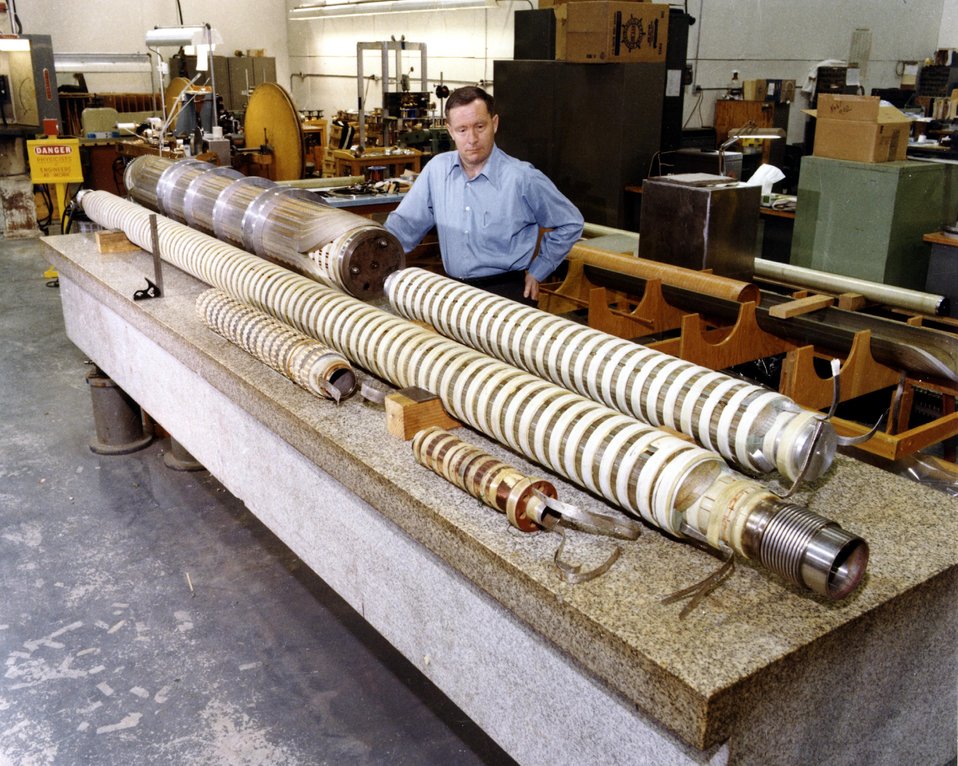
CBA IS A PROTON-PROTON COLLIDING BEAM ACCELERATOR WHICH IS BEING BUILT TO STUDY THE BASIC STRUCTURE OF ENERGY AND MATTER. THE FACILITY ITSELF IS AN UNDERGROUND CIRCULAR TUNNEL, WHICH IS 3.8 KILOMETERS IN CIRCUMFERENCE. TWO RINGS OF SUPERCONDUCTING MAGNETS WILL BE INSIDE THE TUNNEL. PRO- TON BEAMS WILL BE INJECTED INTO THE TUNNEL AND ACCELERATED TO ENERGIES UP TO 400 GEV. AT SIX PLACES ALONG THE TUNNEL, THE BEAMS WILL COLLIDE. EXPERIMENTAL HALLS, WHICH ENCLOSE THESE 6 INTERSECTIONS, WILL HOUSE EQUIPMENT FOR STUDYING THE RESULTS OF THE COLLISIONS.